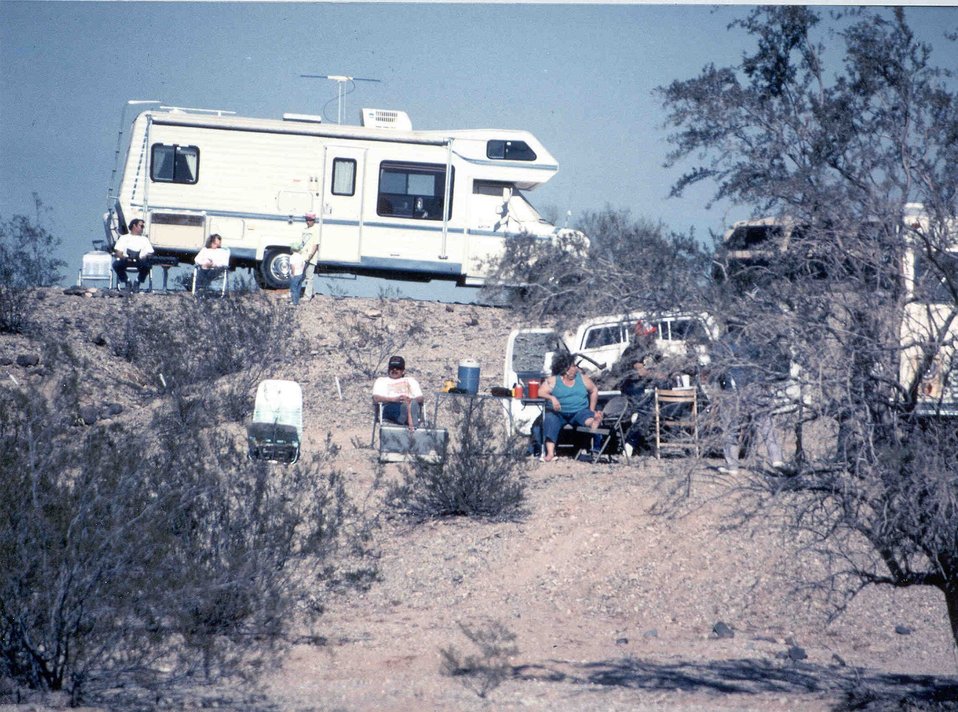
Long Term Visitor Area (LTVA) campers enjoying the mild winter in the Yuma area.